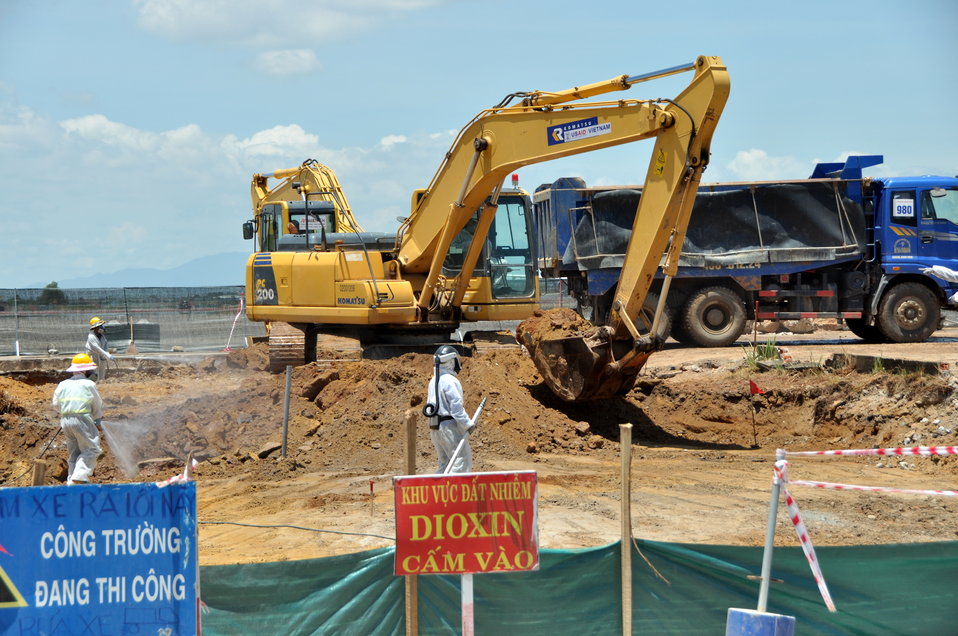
Environmental Remediation Progress at the Danang Airport site

Progress at the Remediation of Dioxin Contamination Project Site

Danang, Vietnam, June 5, 2013